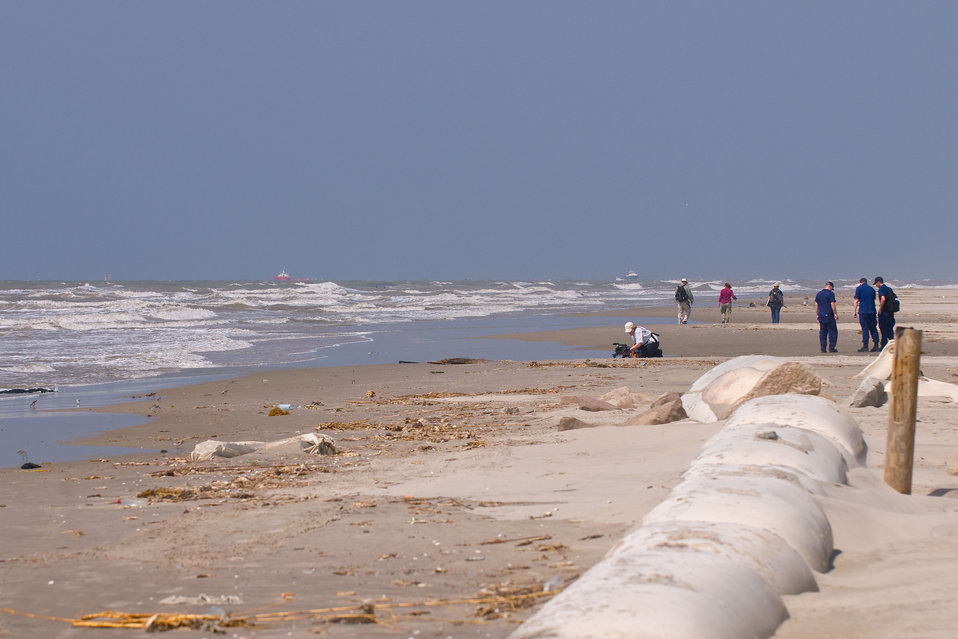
Searching for oil on the beach

May 14, 2010. Beach assessment team from Louisiana DEQ, looking for oil on the beach at Lafourche, La.